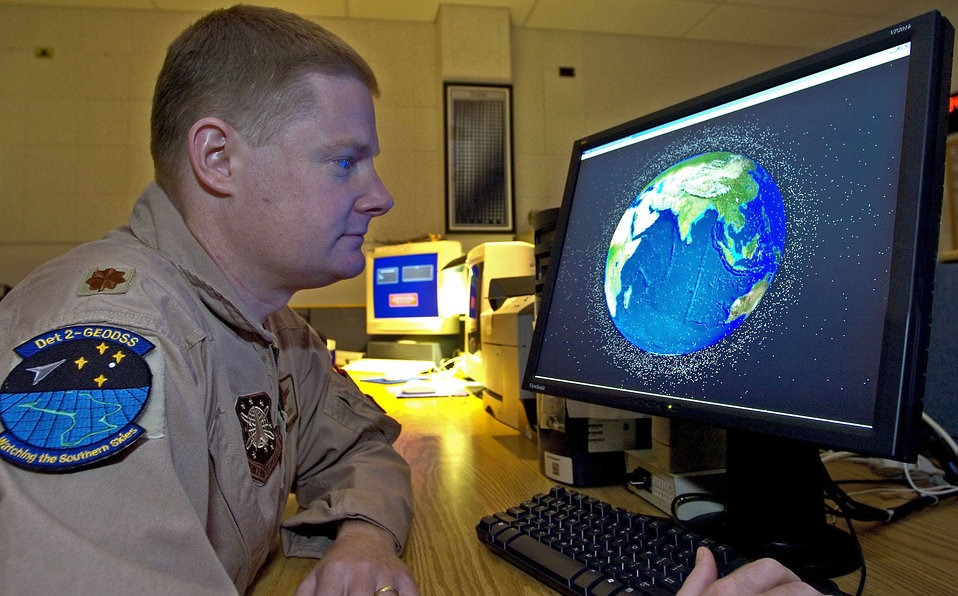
Trackers watch for dangerous 'space junk'

Maj. Jay Fulmer uses space and missile analysis software to track known man-made deep space objects in orbit around Earth. Major Fulmer is commander of Detachment 2 of the Ground-Based Electro-Optical Deep Space Surveillance System in Southwest Asia.